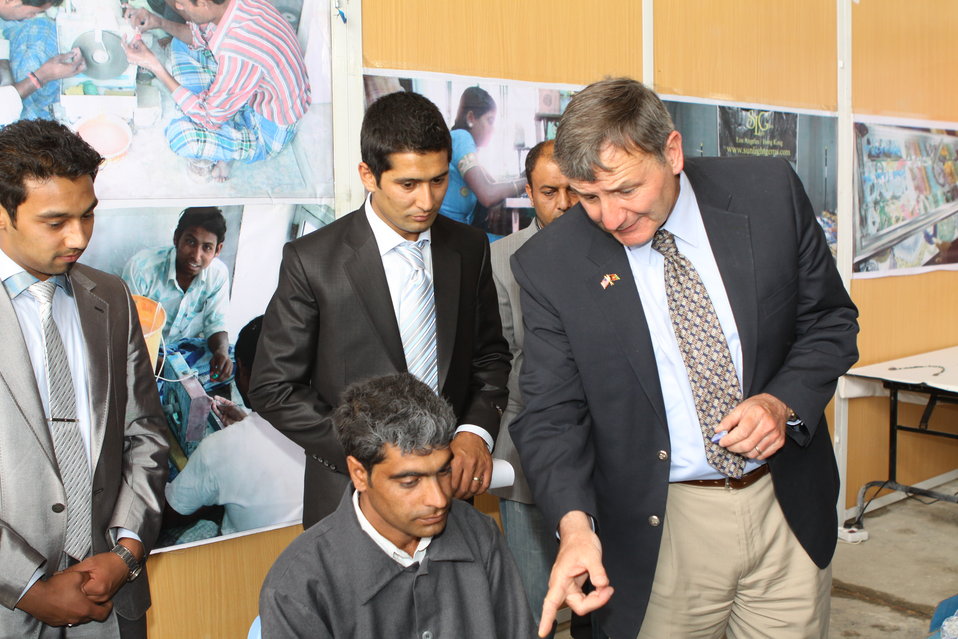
100525 Hirat Marble Conference 524